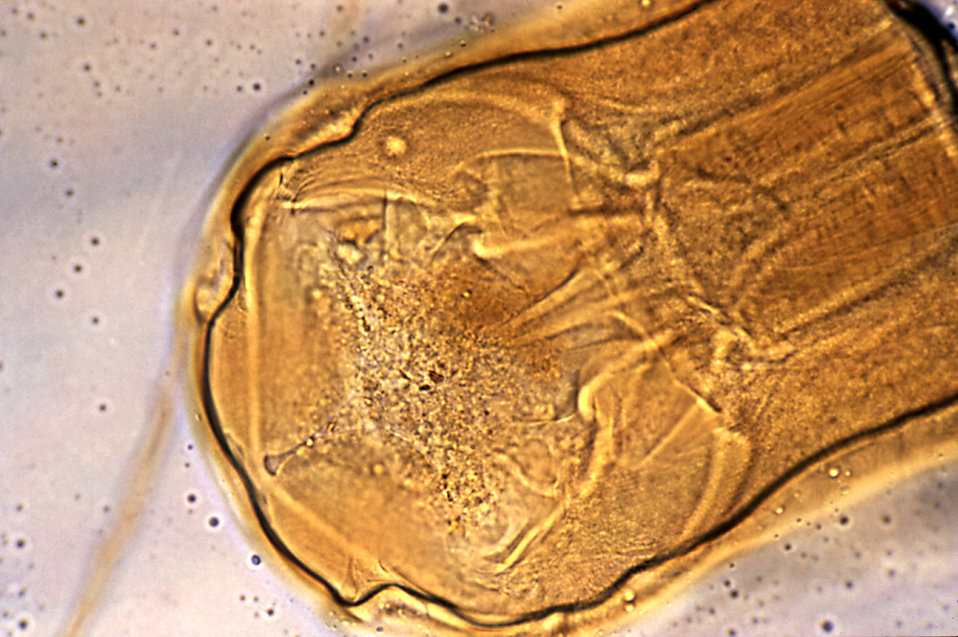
This micrograph reveals the head of the hookworm Necator americanus, and its mouth's cutting plates; Mag. 400X.